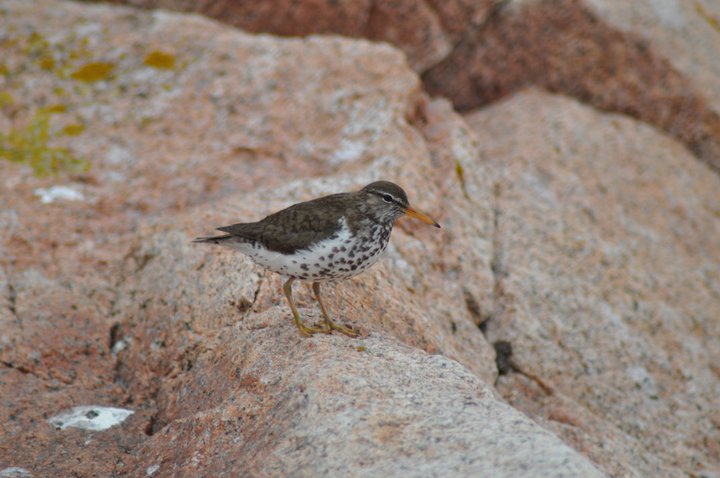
Spotted Sandpiper

A spotted sandpiper at the Nantucket National Wildlife Refuge, MA.